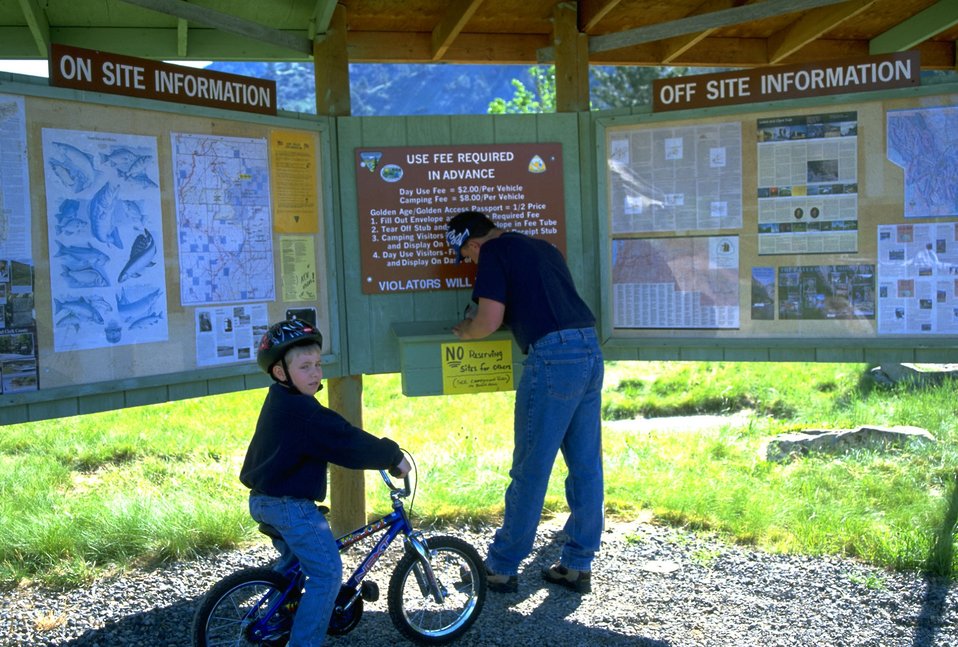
Man and boy at the kiosk at Log Gulch Campground